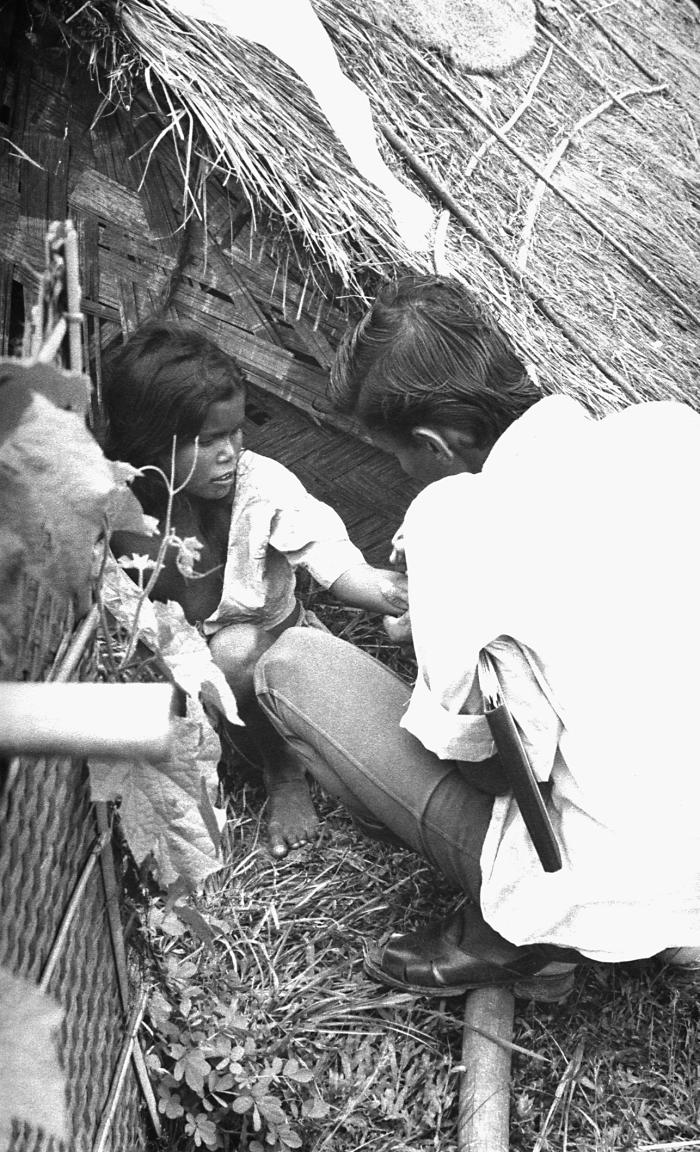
This volunteer smallpox eradication team vaccinator was in the process of vaccinating to a girl who at the time, was living with her family in a bastee, which was an illegal settlement. The bastee was a place where no governmental facilities were present, and where poverty ran rampant. In this image, the bifurcated needle is clearly depicted, as the vaccinator pricks the skin of the vaccinee with the needle after it had been tipped with live vaccinia virus. If the vaccination is successful, a red and itchy bump develops at the vaccine site in three or four days. In the first week, the bump becomes a large blister, fills with pus, and begins to drain. During the second week, the blister begins to dry up and a scab forms. The scab falls off in the third week, leaving a small scar. People who are being vaccinated for the first time have a stronger reaction than those who are being revaccinated.